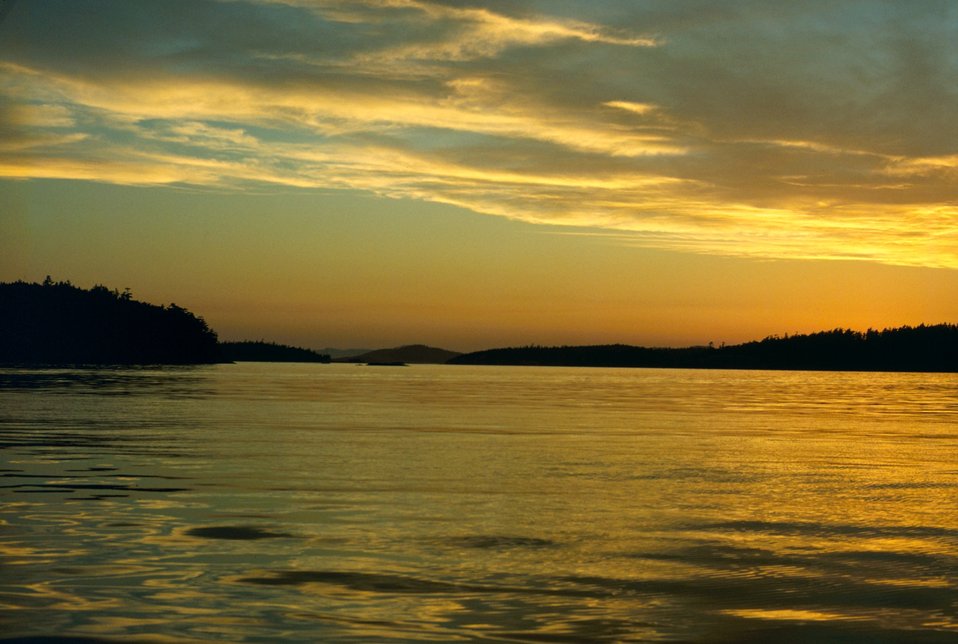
San Juan Islands sunset.